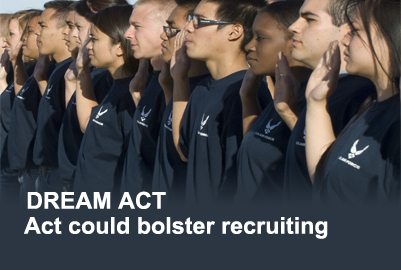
Dream Act could bolster force